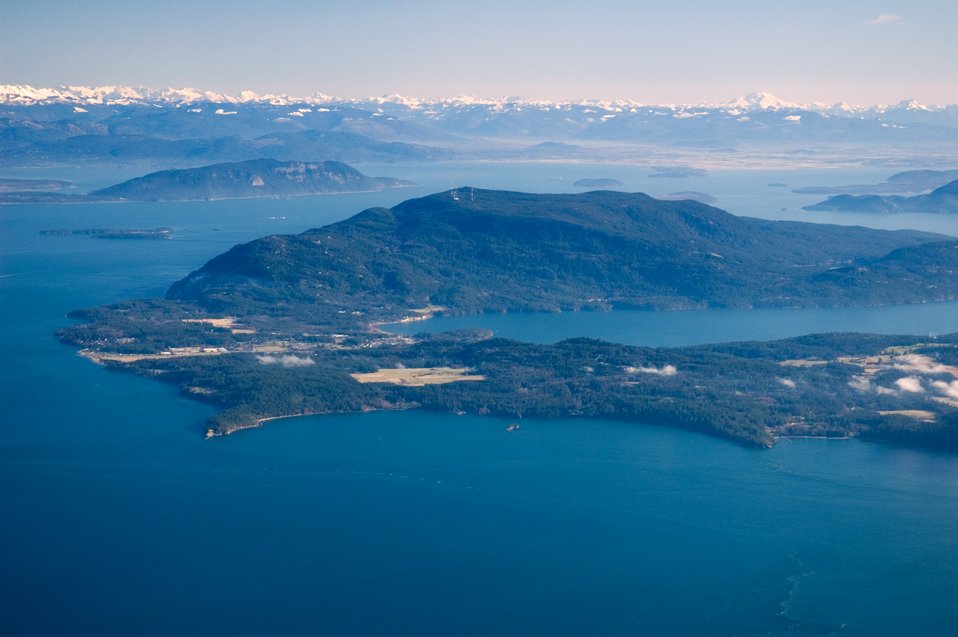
Orcas Island in the San Juans

An aerial view of Orcas Island, one of the islands that make up the San Juan Islands in northern Puget Sound. Its coastline is a mix of sandy and rocky beaches, and shallow and deep harbors which provide habitat for a wide variety of plants and animals.

Learn more about the Puget Sound Ecosystem

Learn more about EPA